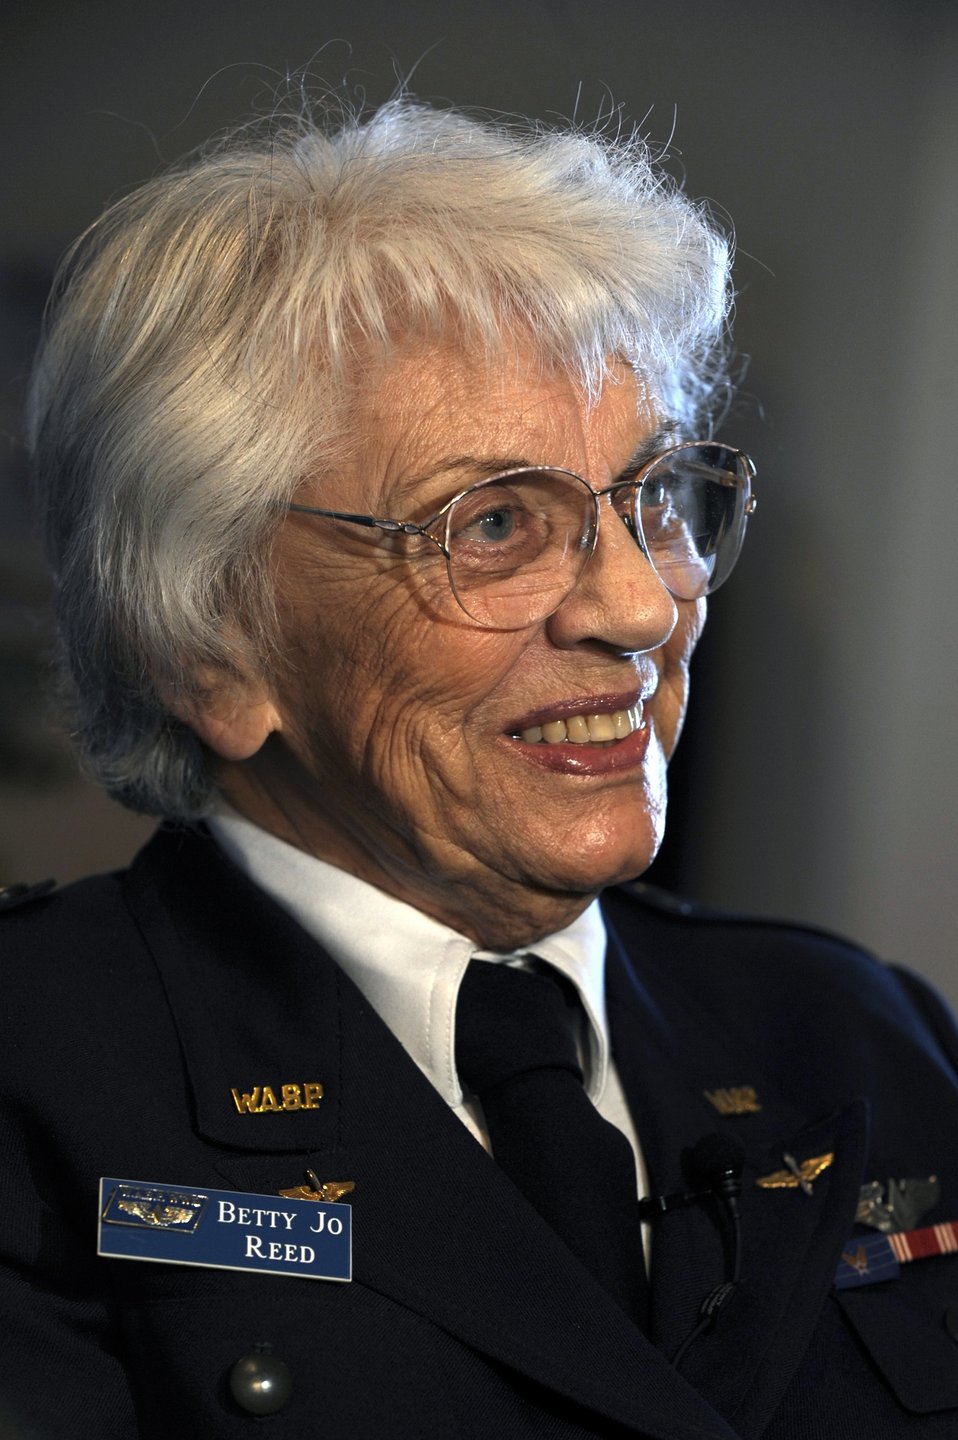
WASP served for love of flight

Betty Jo Streff-Reed recalls her days as a female pilot at the National WASP World War II Museum Jan. 8 in Sweetwater, Texas. Ms. Streff-Reed was a WASP from January to December 1944.